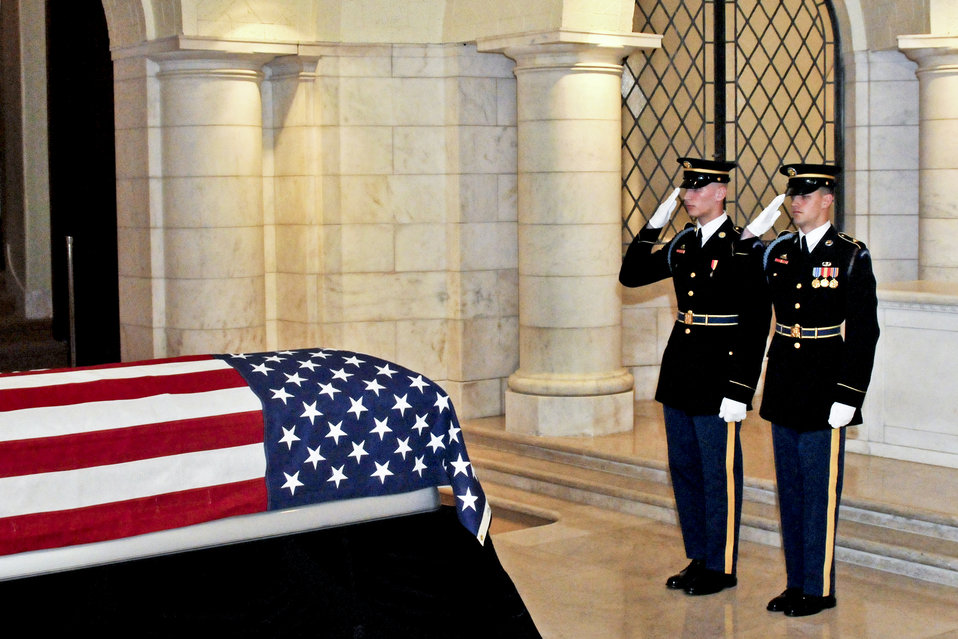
Doughboy’s burial marks end of era

Soldiers with the Army’s 3rd Infantry Regiment, “The Old Guard,” salute to honor Army Cpl. Frank Woodruff Buckles, the last American World War I veteran, during his viewing March 15, 2011, at the Memorial Amphitheater Chapel at Arlington National Cemetery in Arlington, Va.